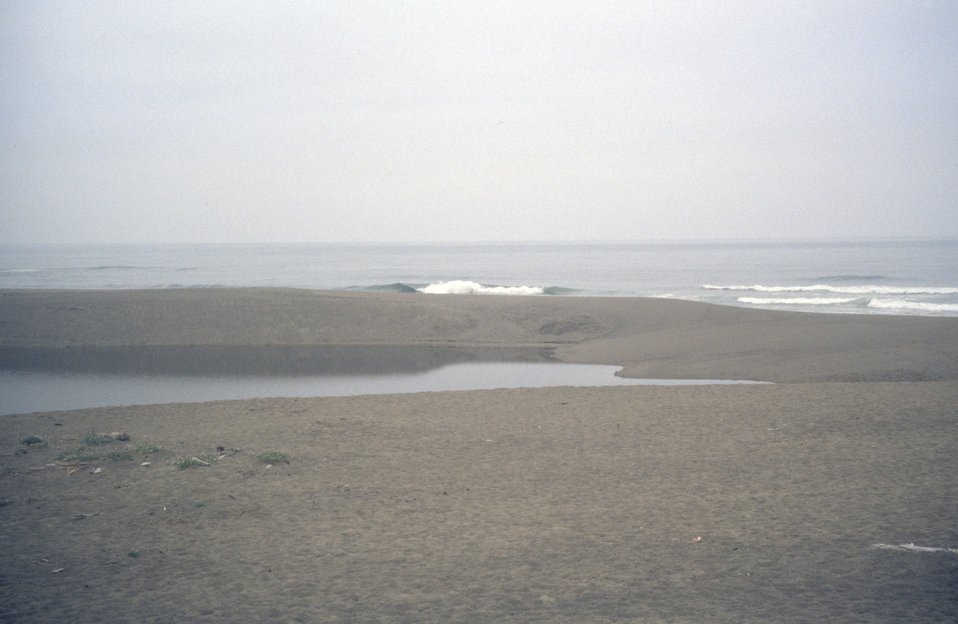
Point Reyes Great Beach